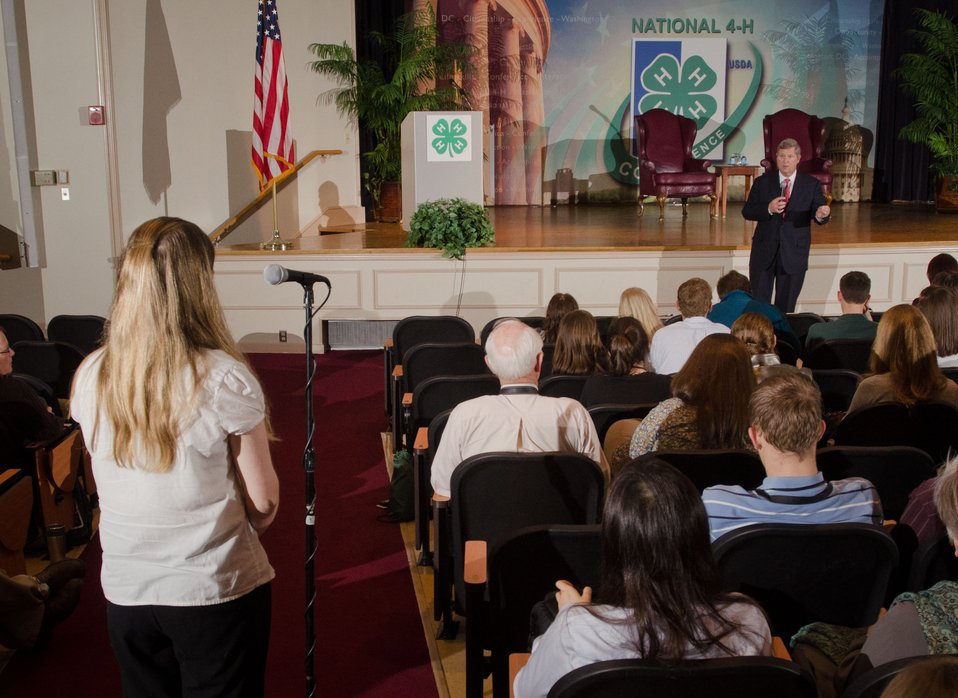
Agriculture Secretary Tom Vilsack speaks with 4-H members at the National 4-H Youth Center in Chevy Chase, MD, on Monday, March 26, 2012. 'For almost 100 years, USDA and 4-H have partnered to produce some of our nation's best and brightest, including farmers and ranchers who have supported the American economy and put food on our tables,' Vilsack said. 'You all are tomorrow's leaders. We need you to think big, innovate and help tackle the important challenges standing between us, a stronger middle class and a stronger nation.'